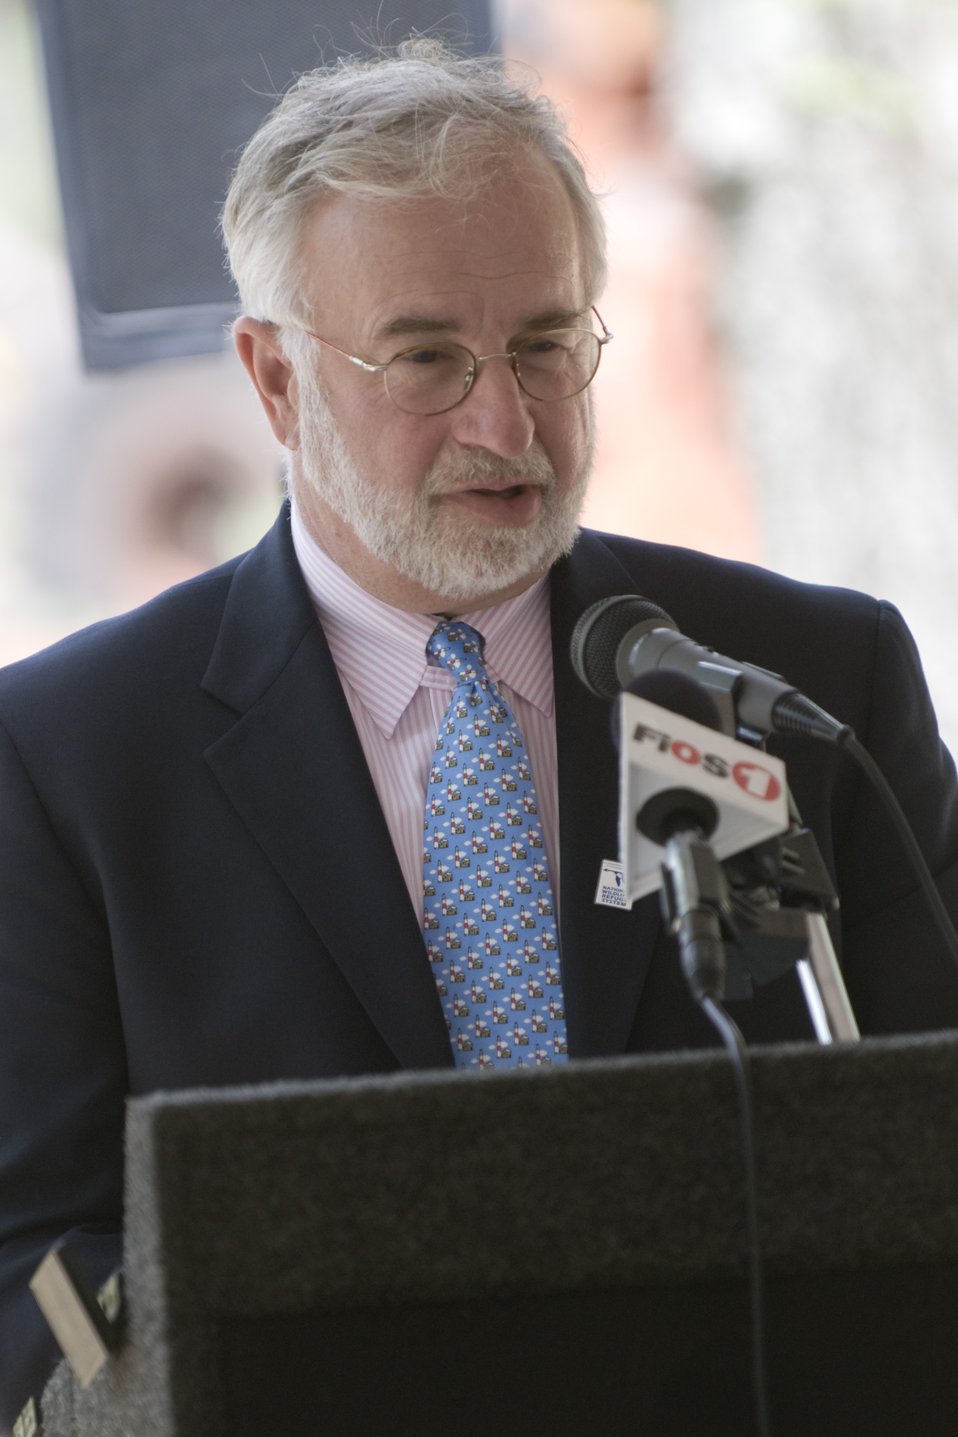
U.S. Congressman Tim Bishop